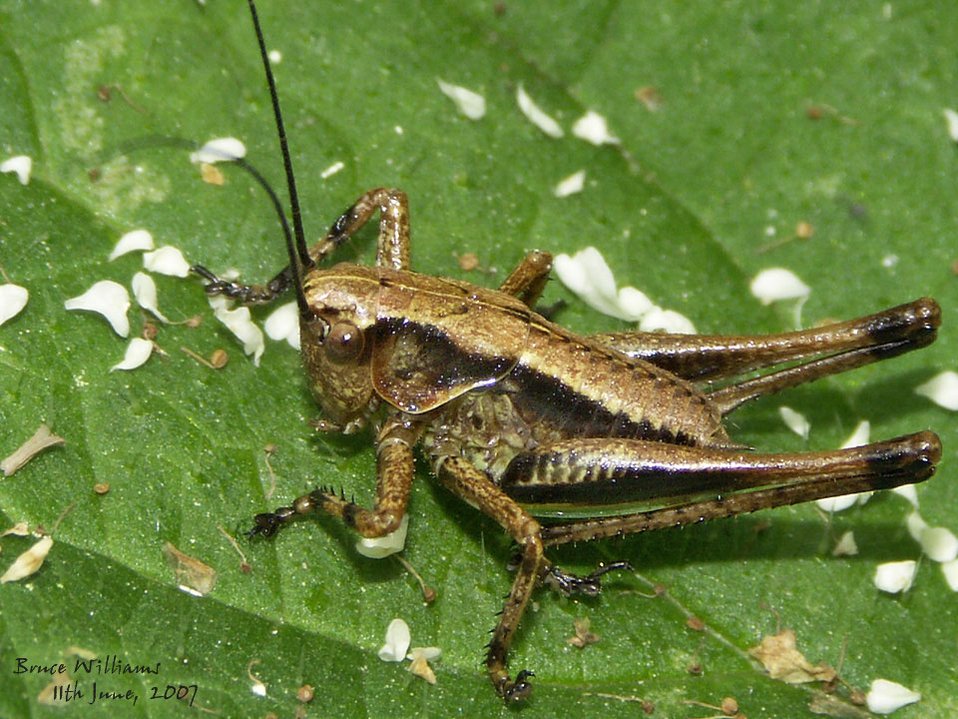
Nymph of the Dark Bush Cricket Pholidoptera griseoaptera (DeGeer) taken by Bruce Williams. Location Salcey Forest, Northamptonshire, England in June 2007.